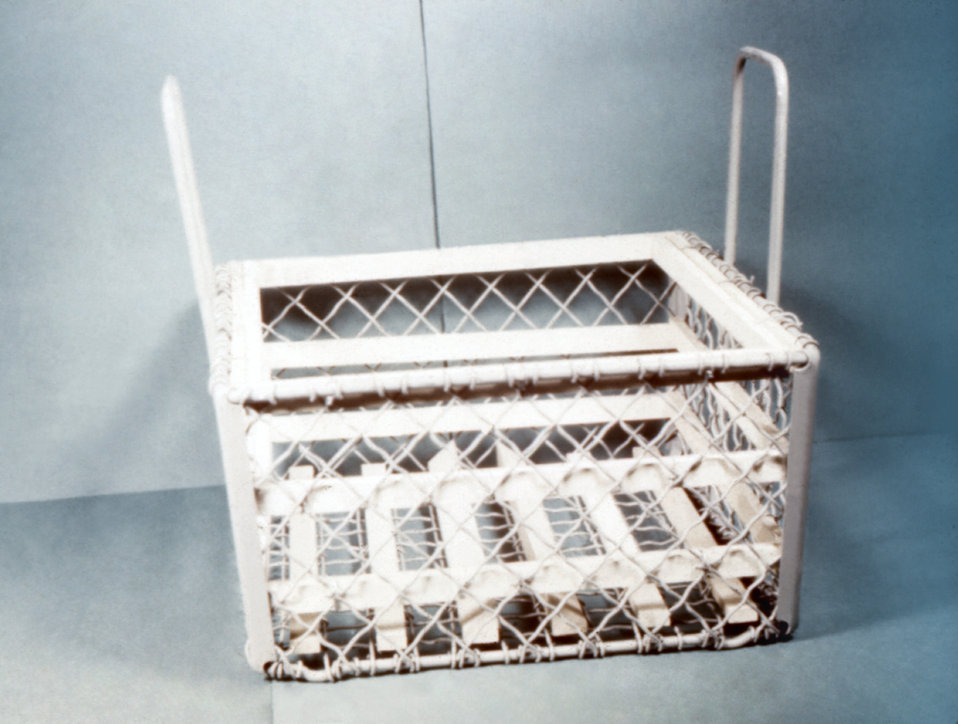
This image depicting a dip basket for washing restaurant utensils, was taken sometime in the 1950s. The apparatus was an advance in sanitation, for it made the washing, rinsing, and sterilization of utensils possible without the sanitizer's hands coming into contact with the implements. This photograph was part of a Minnesota Health Department campaign to promote safe food handling, and to prevent food-borne illnesses.